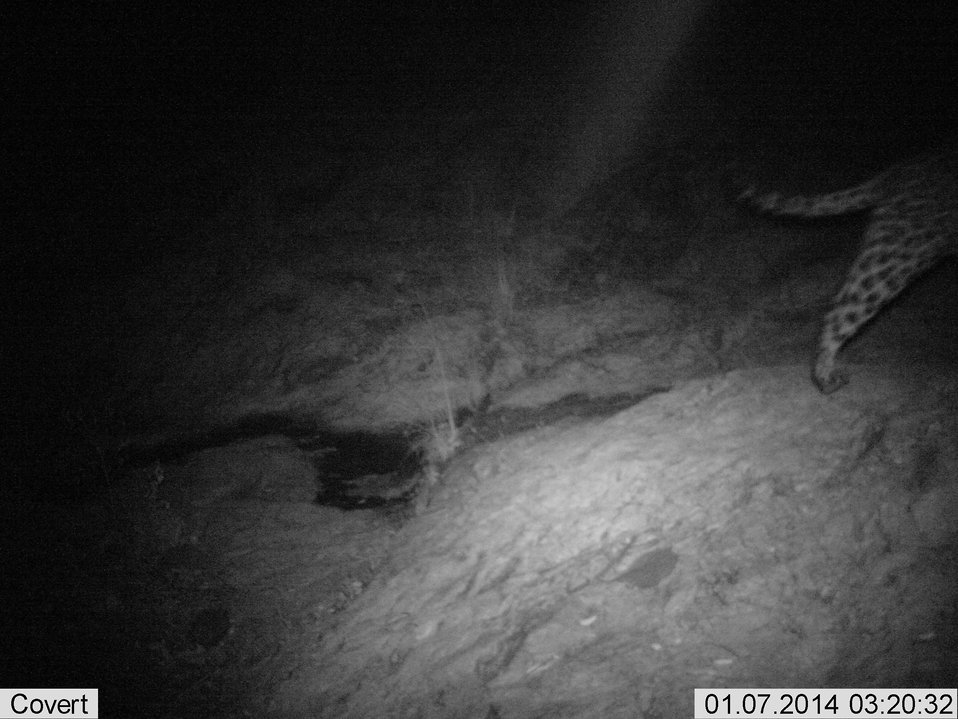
Male Jaguar (Paired Photo)

UA Jaguar 2014-01-07 (03.20).jpg] Male jaguar photographed by automatic wildlife cameras in the Santa Rita Mountains on January 7, 2014, as part of a U.S. Fish and Wildlife Service/Department of Homeland Security-funded jaguar survey conducted by University of Arizona. This is the second of two jaguar photos taken from paired cameras (both sides of jaguar photographed) on January 7. This paired photo location is new but not far from previous photo detections.